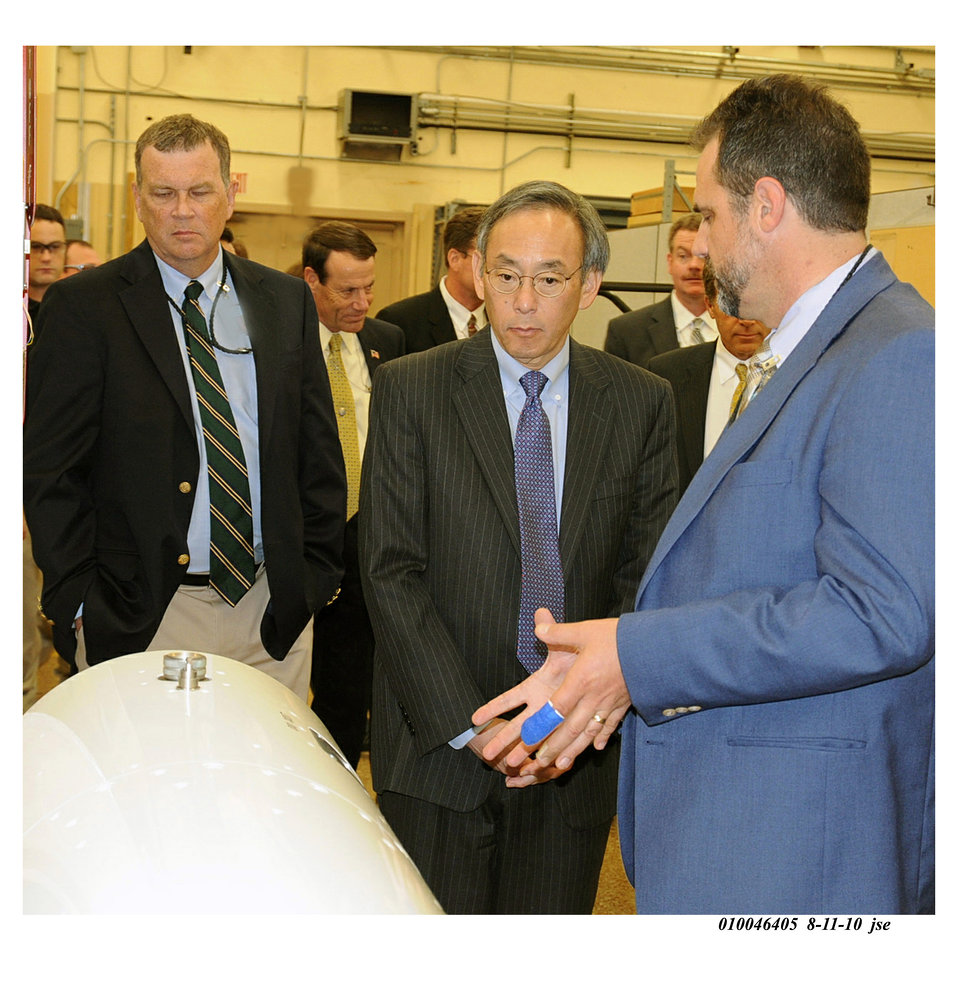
Pantex Plant manager Steve Erhart briefs Secretary Chu on special tools developed for NNSA’s life extension and dismantlement programs during a visit to NNSA’s Pantex Plant. (Aug. 11, 2010)